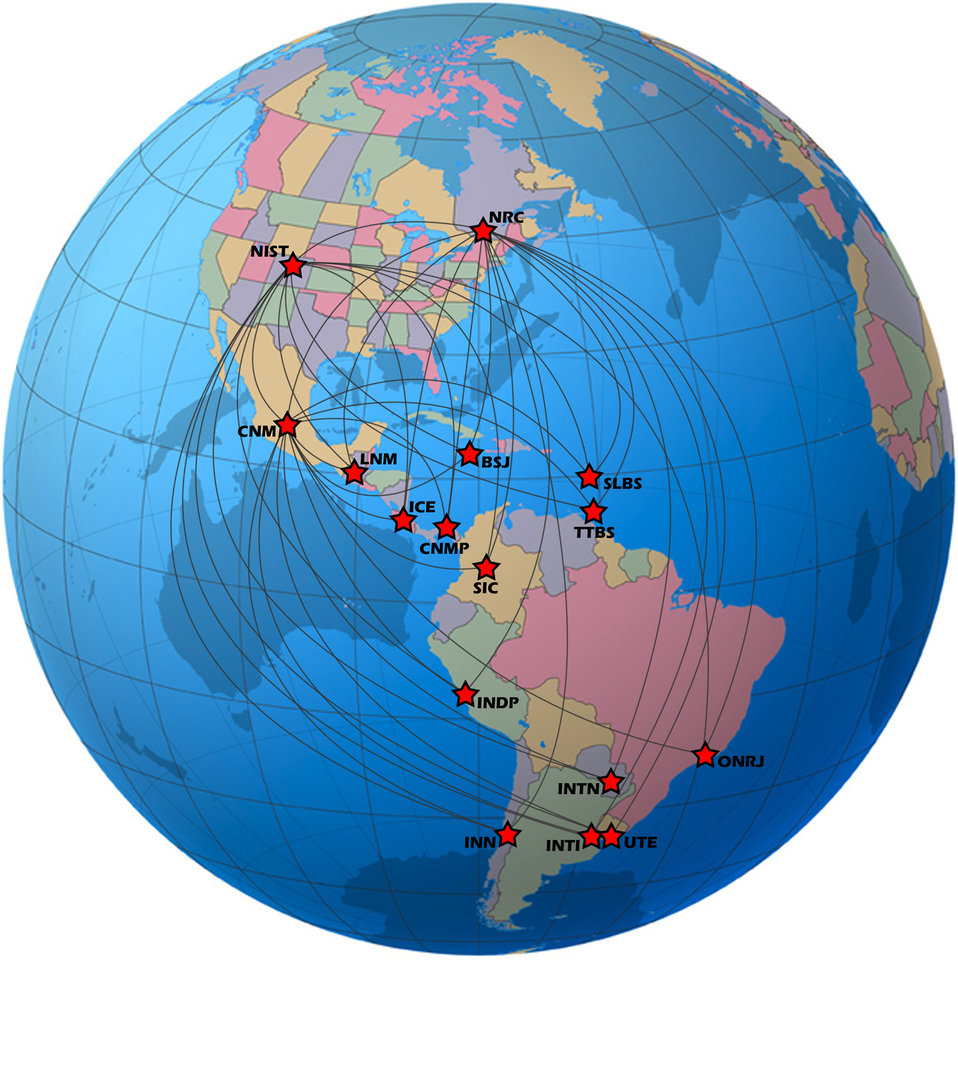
Sistema Interamericano de Metrologia (SIM) Time Network

There are 16 member countries in the Sistema Interamericano de Metrologia (SIM) Time Network that contribute to the continuous, near real-time comparisons of their respective time standards.